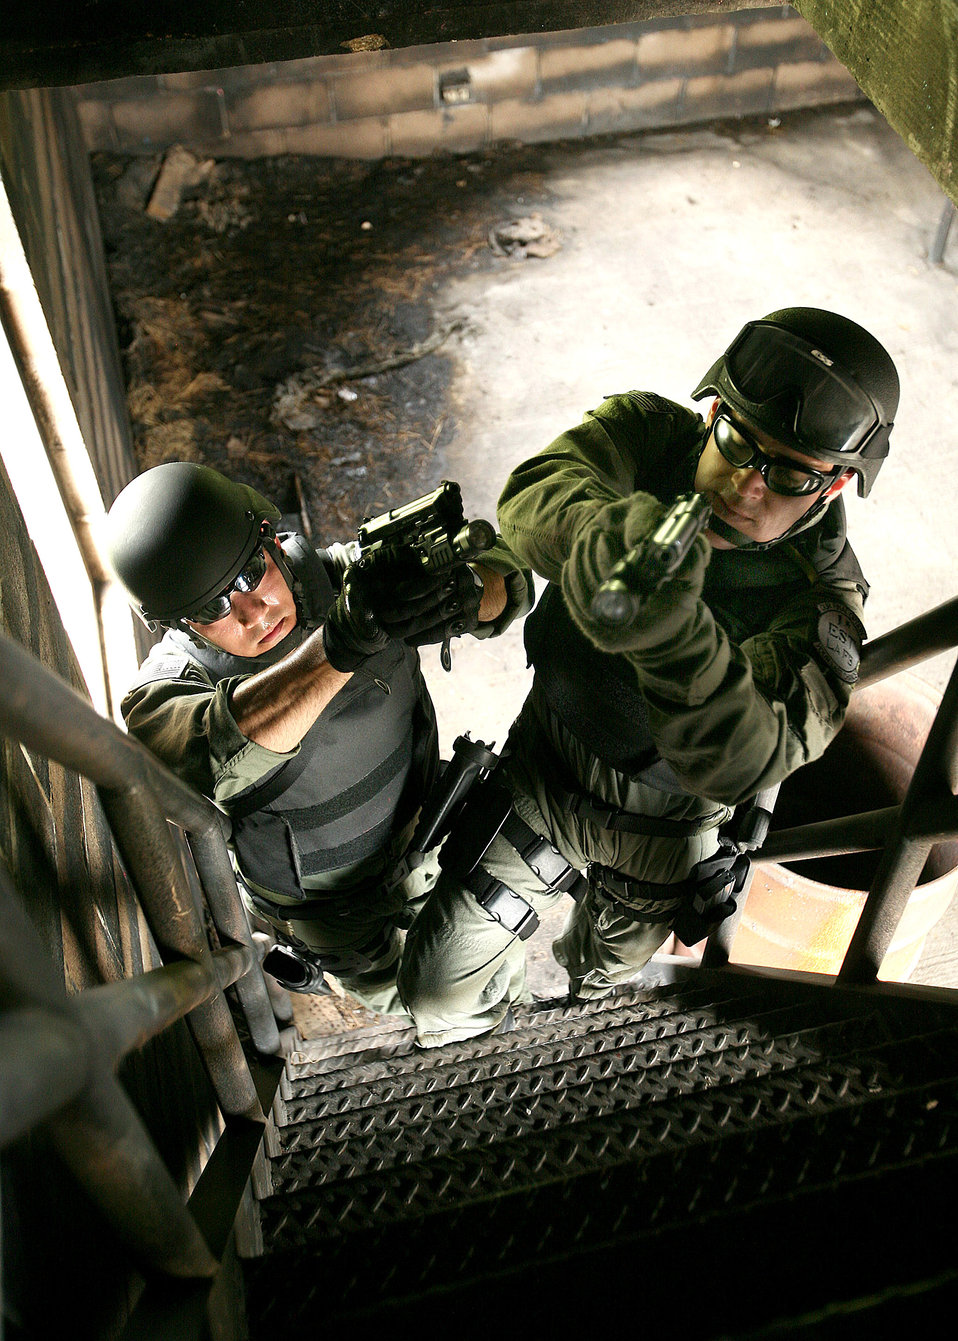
You'd better come out!

Staff Sgt. Bryan Garcia (left) and Master Sgt. Ronald Thompson make their way up a flight of stairs to the attic to clear a target building during a training session at Lackland Air Force Base, Texas.